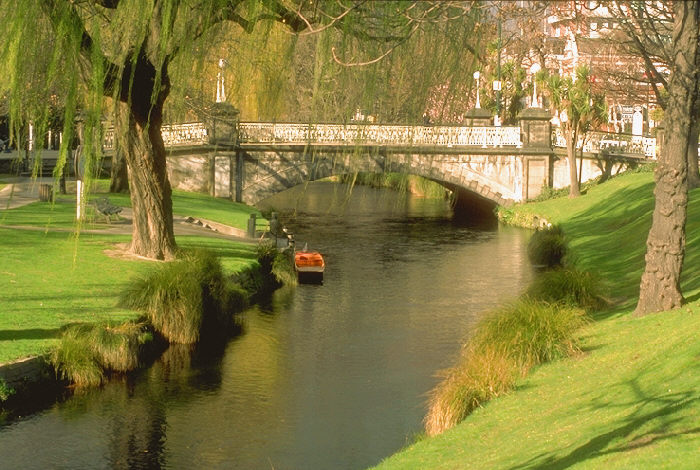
River Avon, Christchurch, South Island, New Zealand.